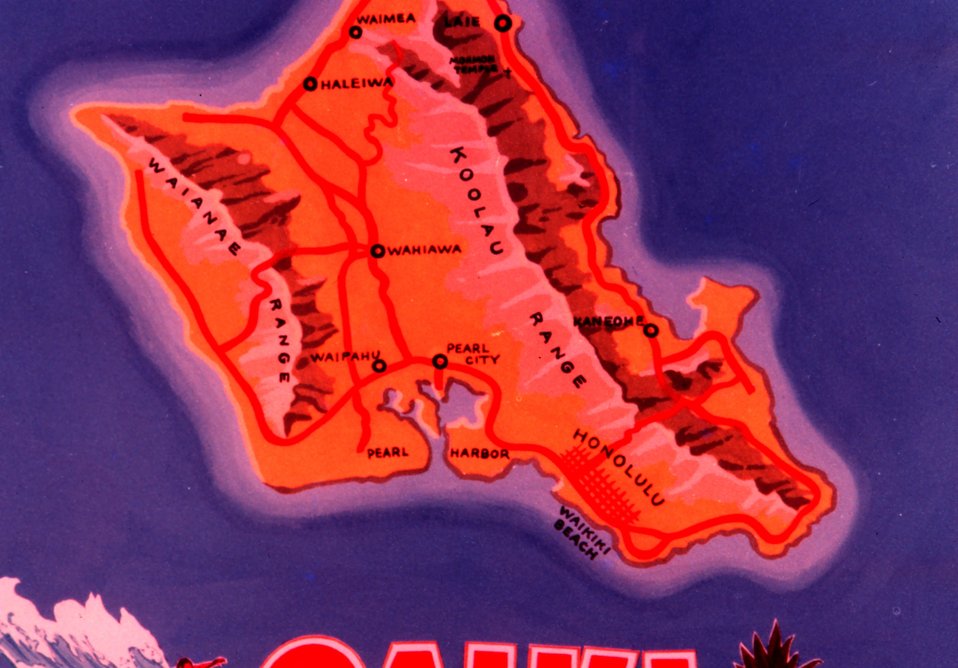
Oahu map